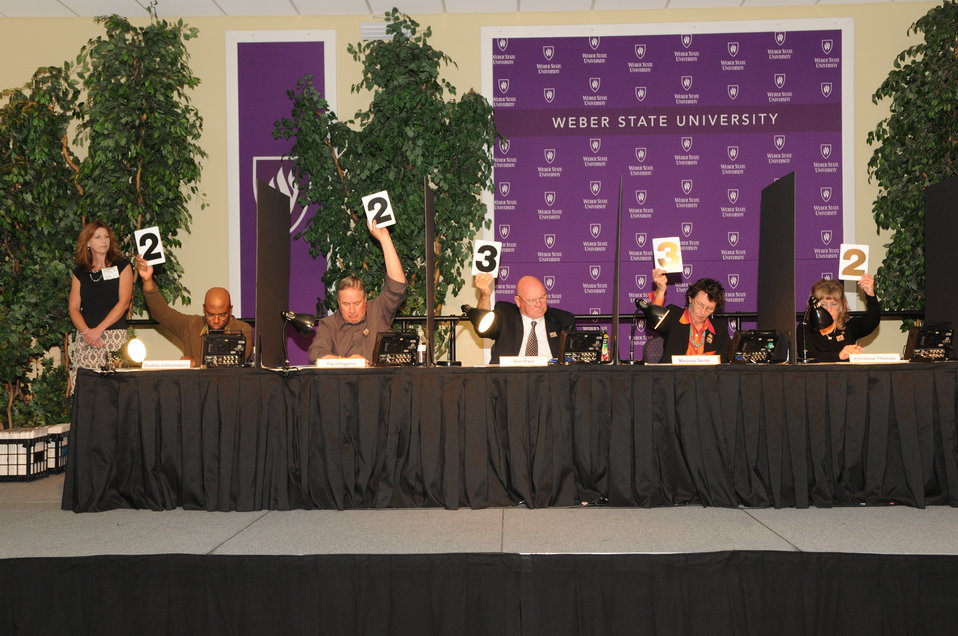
Judging

The U.S. Fish & Wildlife Service sponsored the 2012 Federal Duck Stamp Art Contest September 28 and 29 in Ogden, Utah, at Weber State University. A panel of five judges was responsible for choosing the art work used to design the 2013-2014 Migratory Bird Hunting and Conservation Stamp.